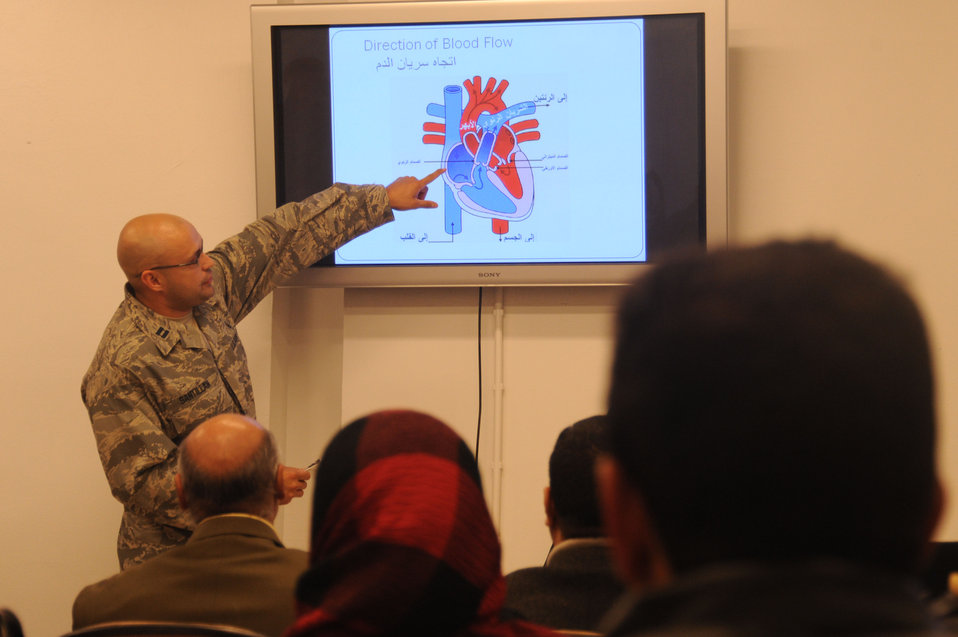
Air Force nurses welcome Iraqi colleagues, share skills

Capt. Fredrick Santillan explains the cardiopulmonary system to Iraqi nurses and nursing students Dec. 9, 2009, at the Air Force Theater Hospital at Joint Base Balad, Iraq. The class was part of the Iraqi Nursing Partnership Program, aimed to teach Iraqis modern medical techniques once a month. The students begin each class with a lecture covering the day's primary topic and then complete a hands-on portion, when they put those teachings into practice. Captain Santillan is a 332nd Expeditionary Medical Group registered nurse.